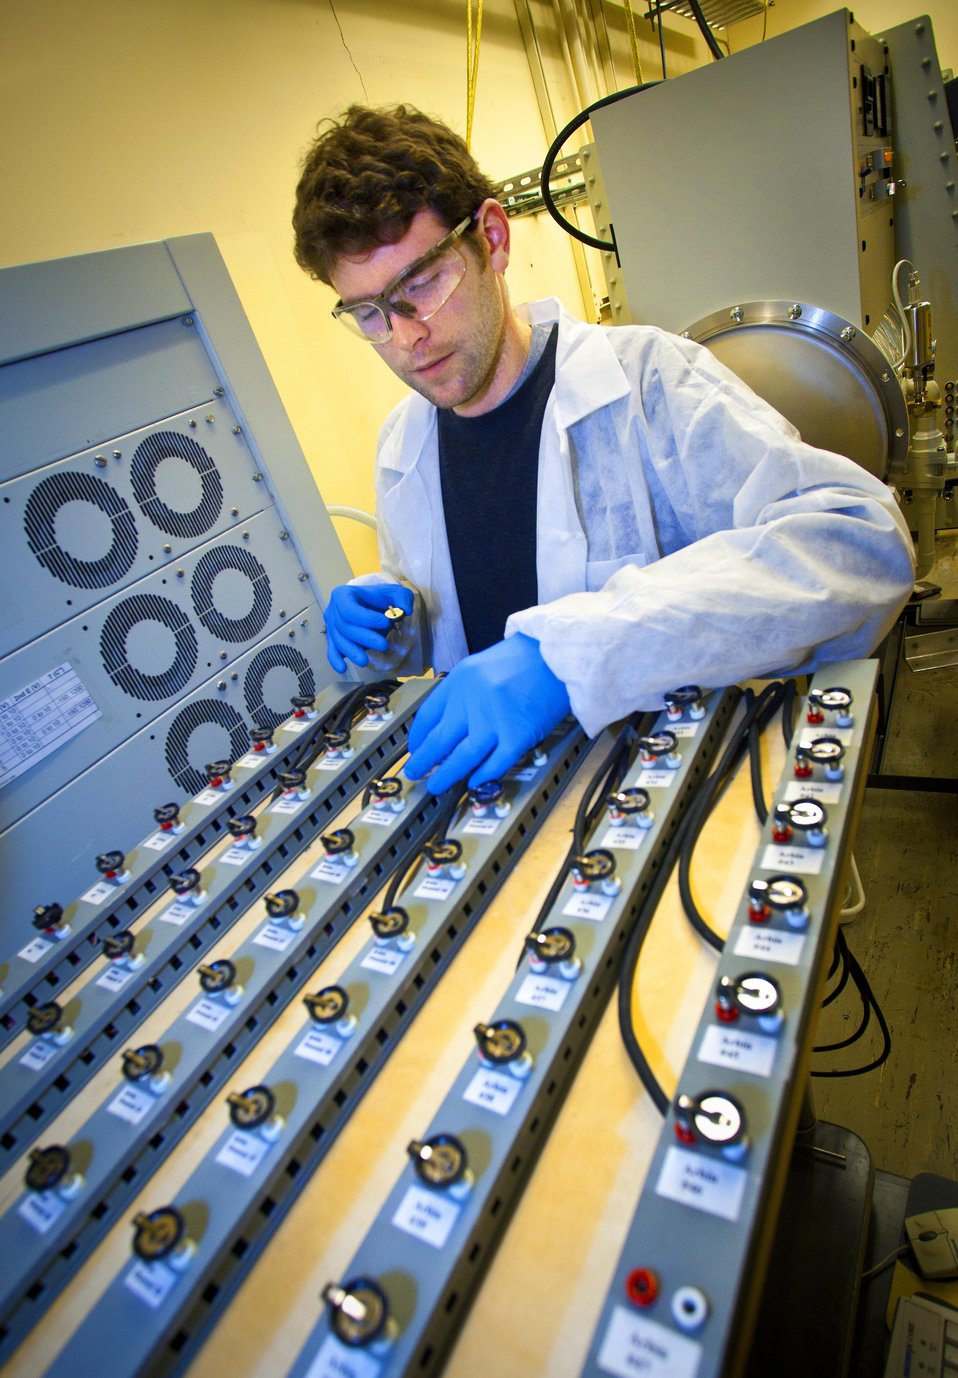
Lawrence Berkeley National Laboratory scientist loads a lithium coin cell sized battery for testing on a battery cycler at the lab's Environmental Energy Technologies Division.

Lawrence Berkeley National Laboratory is one of several major U.S. research institutions and industrial firms that form the Joint Center for Energy Storage Research, a public-private partnership which aims to overcome critical scientific and technical barriers and create new breakthrough energy storage technologies.